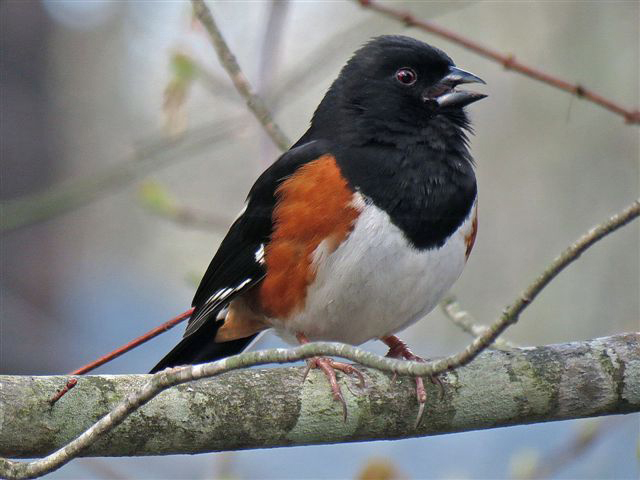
Photo of the Week - Rufous Sided Towhee (RI)

Photo of the Week - 4/30/12

Rufous sided towhee photographed at Trustom Pond National Wildlife Refuge.